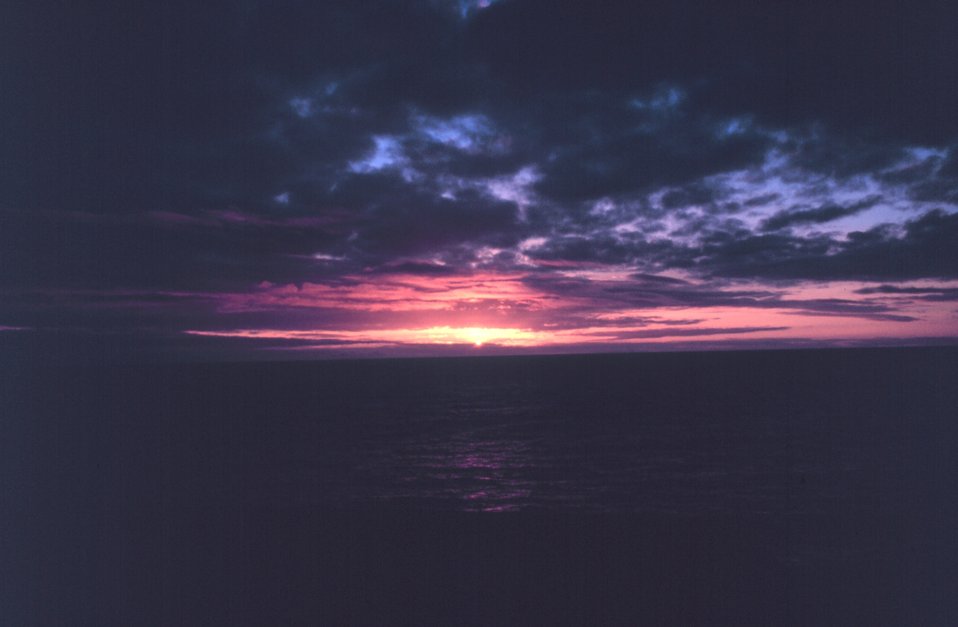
Sunset at sea.